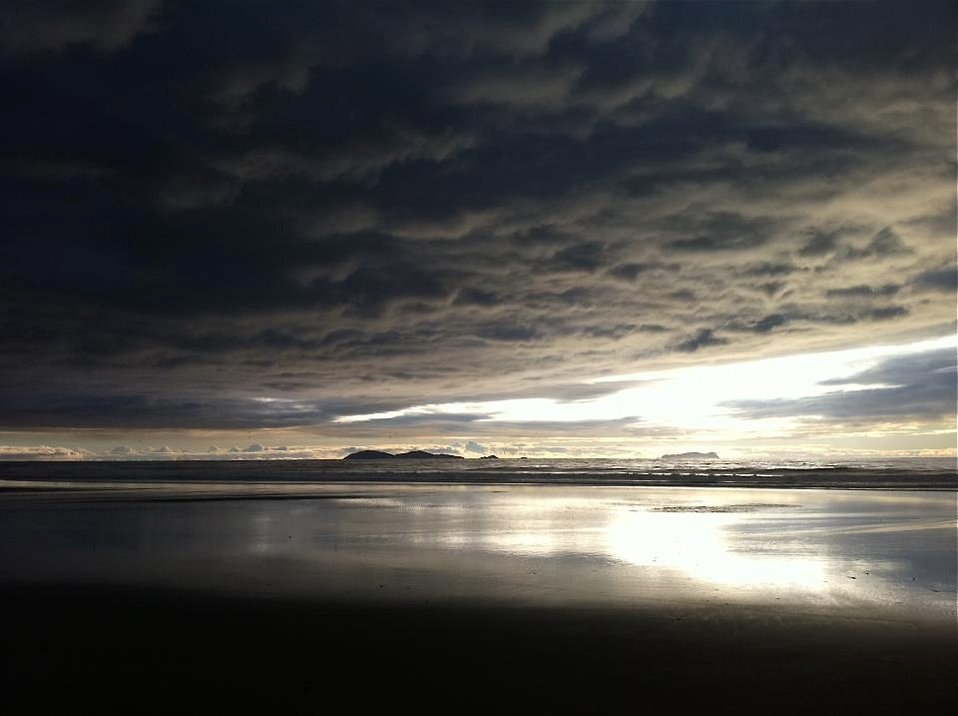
mouth of the Tjuana River

Tijuana Slough National Wildlife Refuge, CA